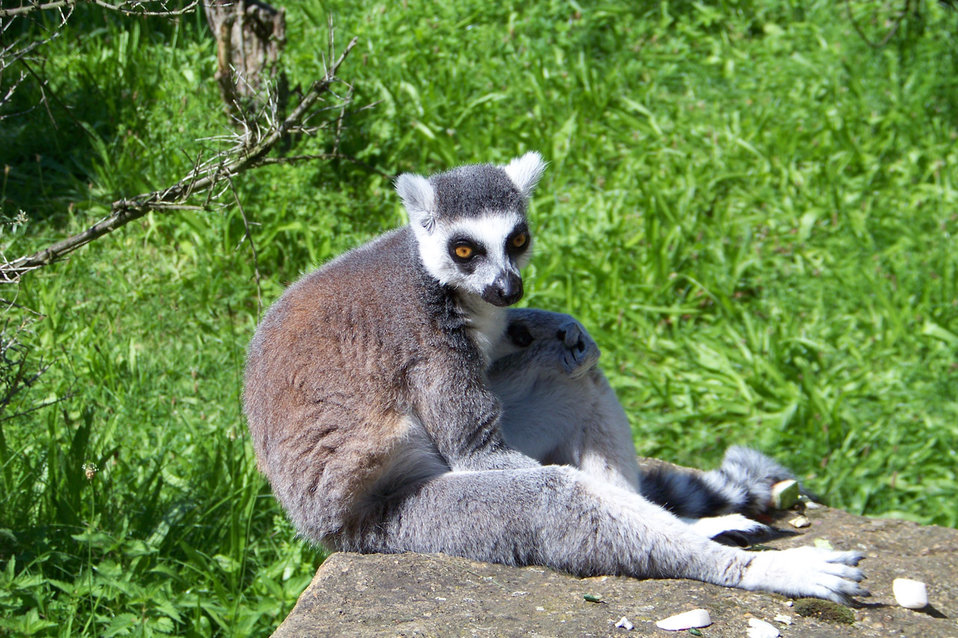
Lemur

Sitting lemur.